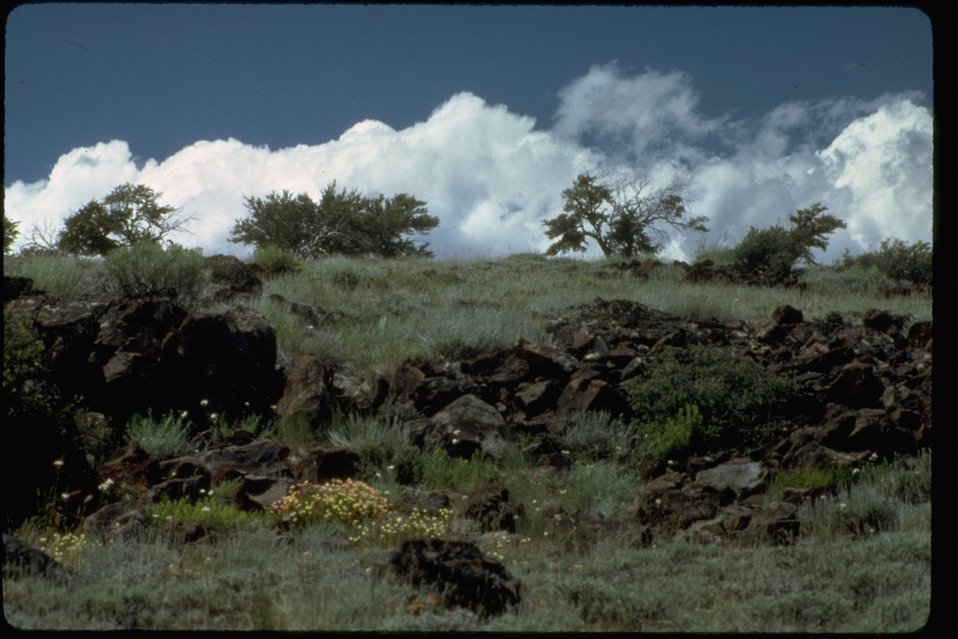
Spring wildflowers at Abert Rim Wilderness Study Area. OR 1-101.